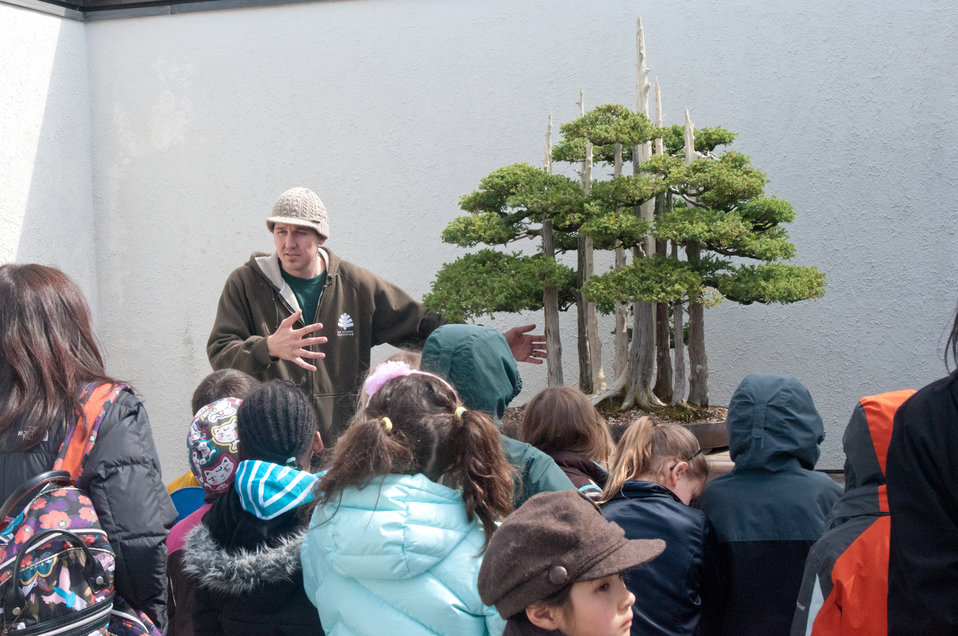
Assistant Curator Aarin Packard (green fleece jacket and knit cap) talks to second grade students from Sidwell Friends School, Washington, DC, who visited the National Bonsai & Penjing Museum, in the U.S. Department of Agriculture, Agriculture Research Service's National Arboretum, in Washington, DC, on March 29, 2011. Mr. Packard told the children the story of the man who created this setting of bonsai trees to represent his grand children, and that of the 11 trees in this plot, the smallest represented the eldest grand child who at first did not like that, but was told that the two most important trees were the biggest and the smallest. The smallest tree on the edge is the first to lead the group to becoming a larger group. Packard used several other trees to explain the many special needs of caring for bonsai trees, and that the trees are simply regular trees, trained and controlled to grow in a small form. The trimming of trees is given great consideration over long periods of time before a major cut would be made. Packard also expressed that the trees may be small but they are often hundreds of years old. Before the tour, he did some research and found that Princess Chichibu of Japan, 1928 alum of Sidwell Friends School, donated one of the bonsai trees.